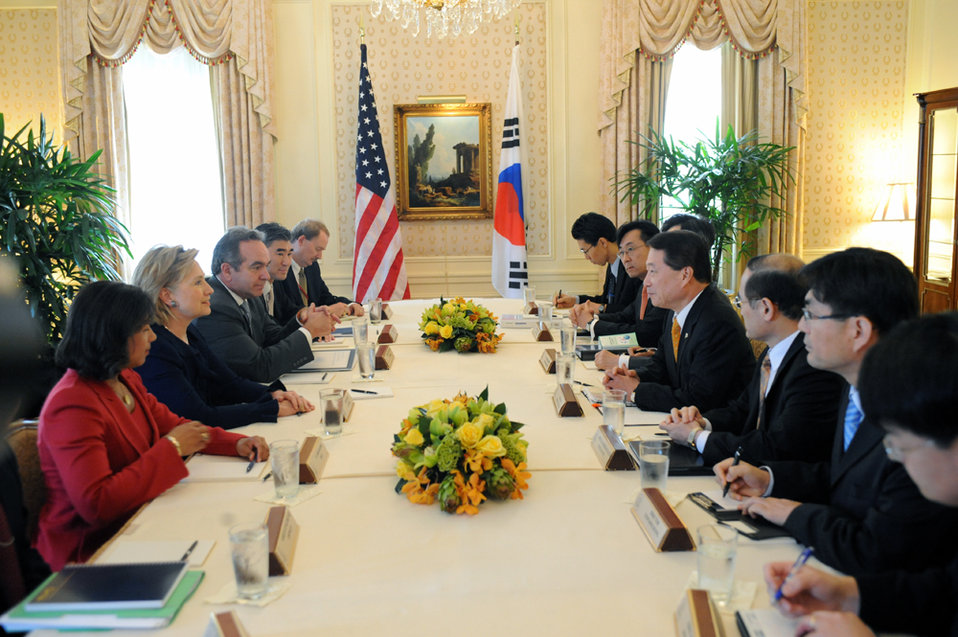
UNGA 2009: Secretary Clinton Meets With South Korean Foreign Minister

U.S. Secretary of State Hillary Rodham Clinton meets with South Korean Minister of Foreign Affairs and Trade Yu Myung-hwan at the Waldorf Astoria hotel during the 64th Session of the UN General Assembly in New York City, New York September 21, 2009.